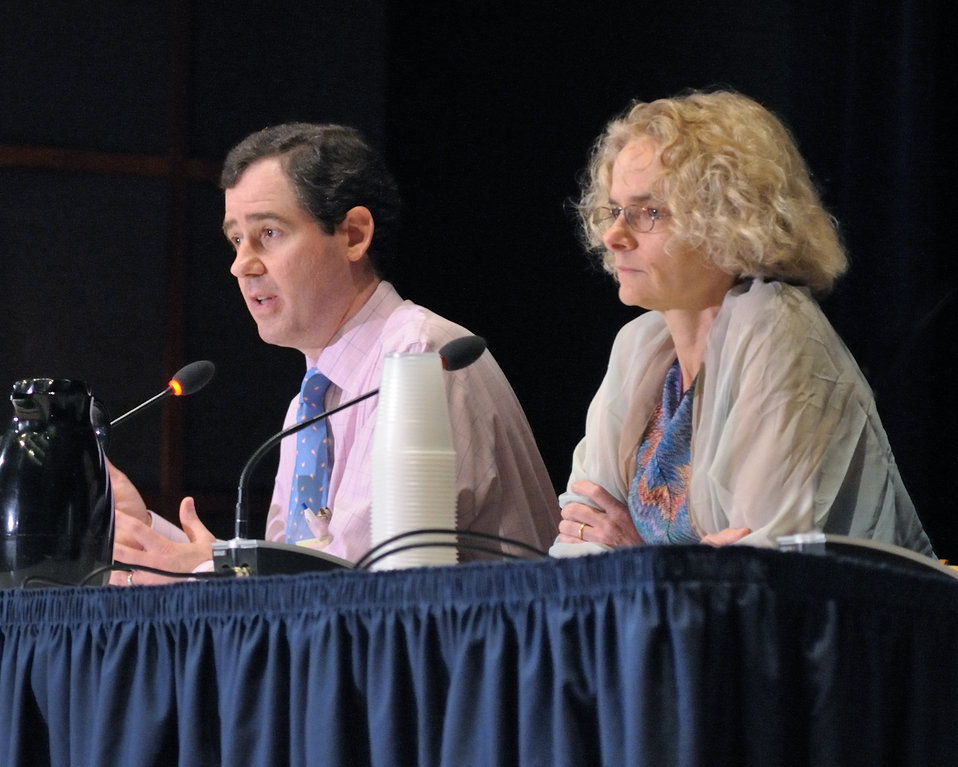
Panelists - APP Aug 2011

Expert panelists give their reactions following actors’ readings at NIDA’s Addiction Performance Project, held Aug 5 on the NIH Campus
(Pictured L-R: Dr. Paul Christo, pain medicine specialist at Johns Hopkins Medicine and Dr. Nora Volkow, NIDA Director)